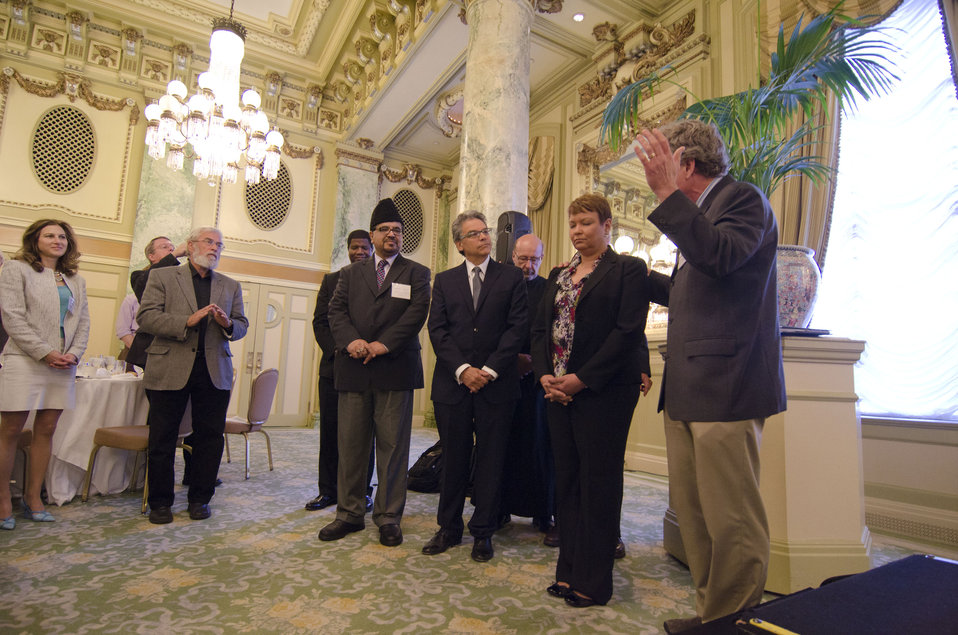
2011-05-05 NRCCCPrayerBreakfast 079

US EPA Administrator L. P. Jackson receiving blessing at National Religious Coalition on Creation Care Prayer Breakfast. She is surround by Sara Valenzuela, Earth Day Network, Fr. Daniel Webster, Episcopal Church, Rabbi David Shneyer, Am Kolel, Bishop Eugene Sutton, Episcopal Diocese of Maryland, Imam Nasim Mahdi, Ahmadiyya Muslim Community, Rabbi Warren Stone, Temple Emanuel, Fr. Sergei Kapral, Orthodox Church of America, Rev. Tom Carr, First Baptist Church